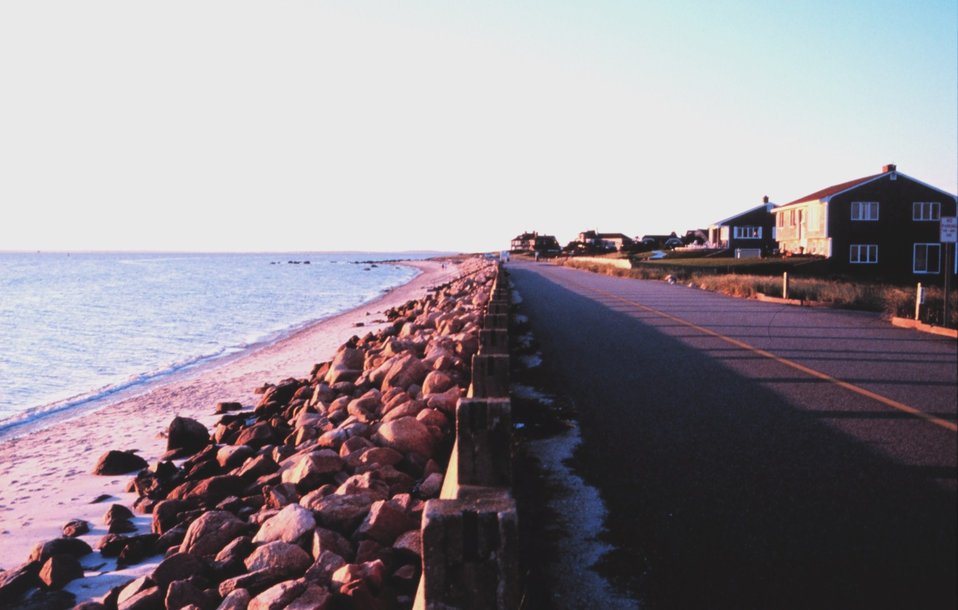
Chapaquoit Beach, West Falmouth